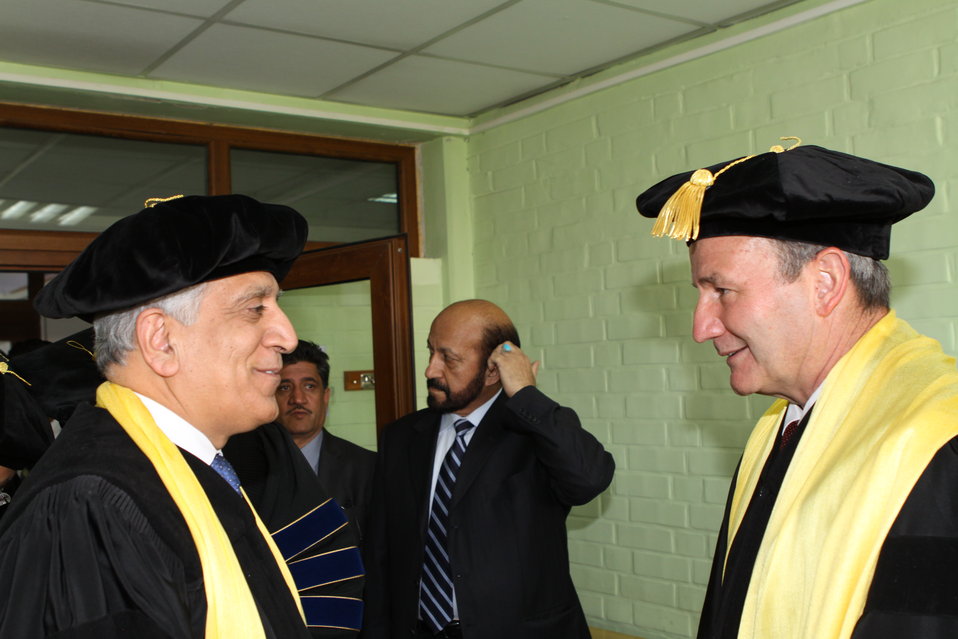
100526 AUAF Graduation 082